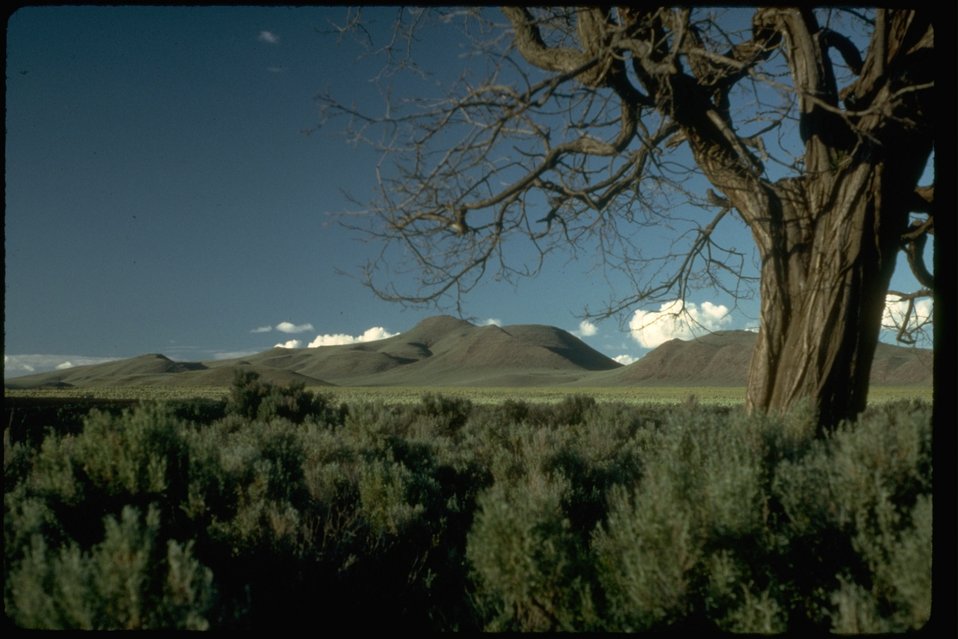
Tree and sagebrush with Sheephead Mountain in the background. OR 2-72J